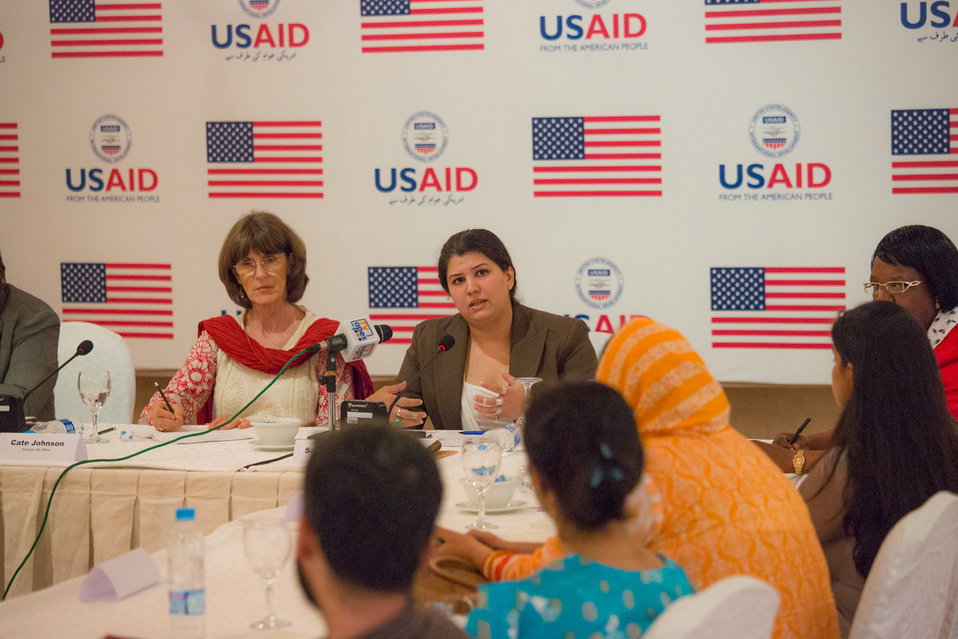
Islamabad, September 6, 2012 - Participants of the US-funded Study Tour on Gender-Based Violence take part in a discussion.